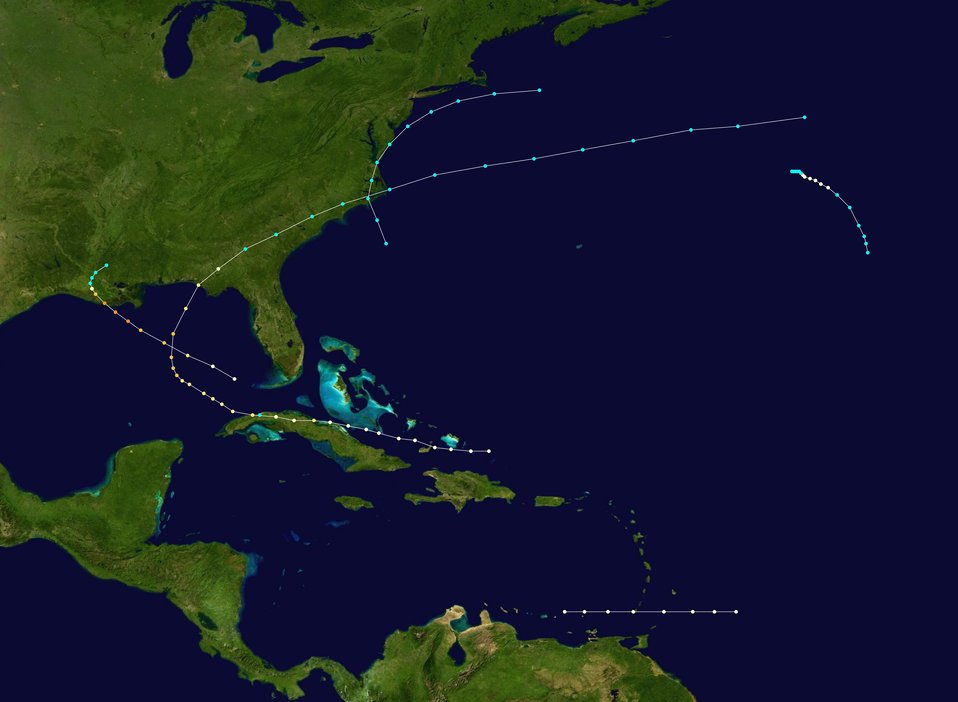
1856 Atlantic hurricane season summary